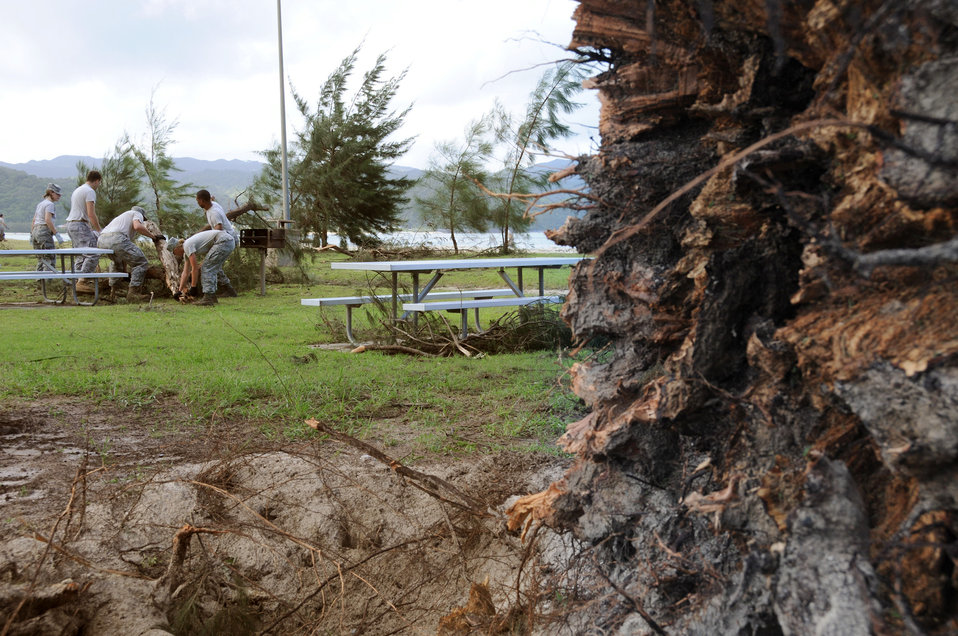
Airmen clean up after typhoon

Airmen from Kadena Air Base, Japan, move a fallen tree to a collection pile at the Okuma Recreation Area Sep. 2, 2010. More than 100 Airmen volunteered to help clean up the debris left when Typhoon Kompasu struck Okinawa Aug. 31.